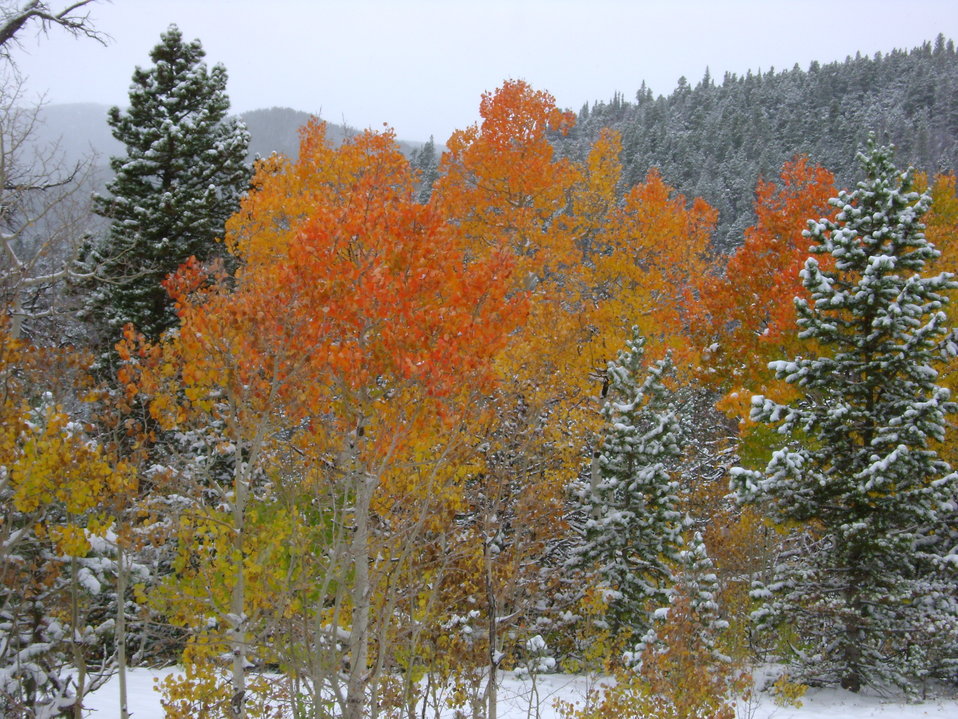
Bright orange, gold, yellow and green aspen line a snow-dusted pine forest on the Camp Dick Campground, Roosevelt National Forest, CO.